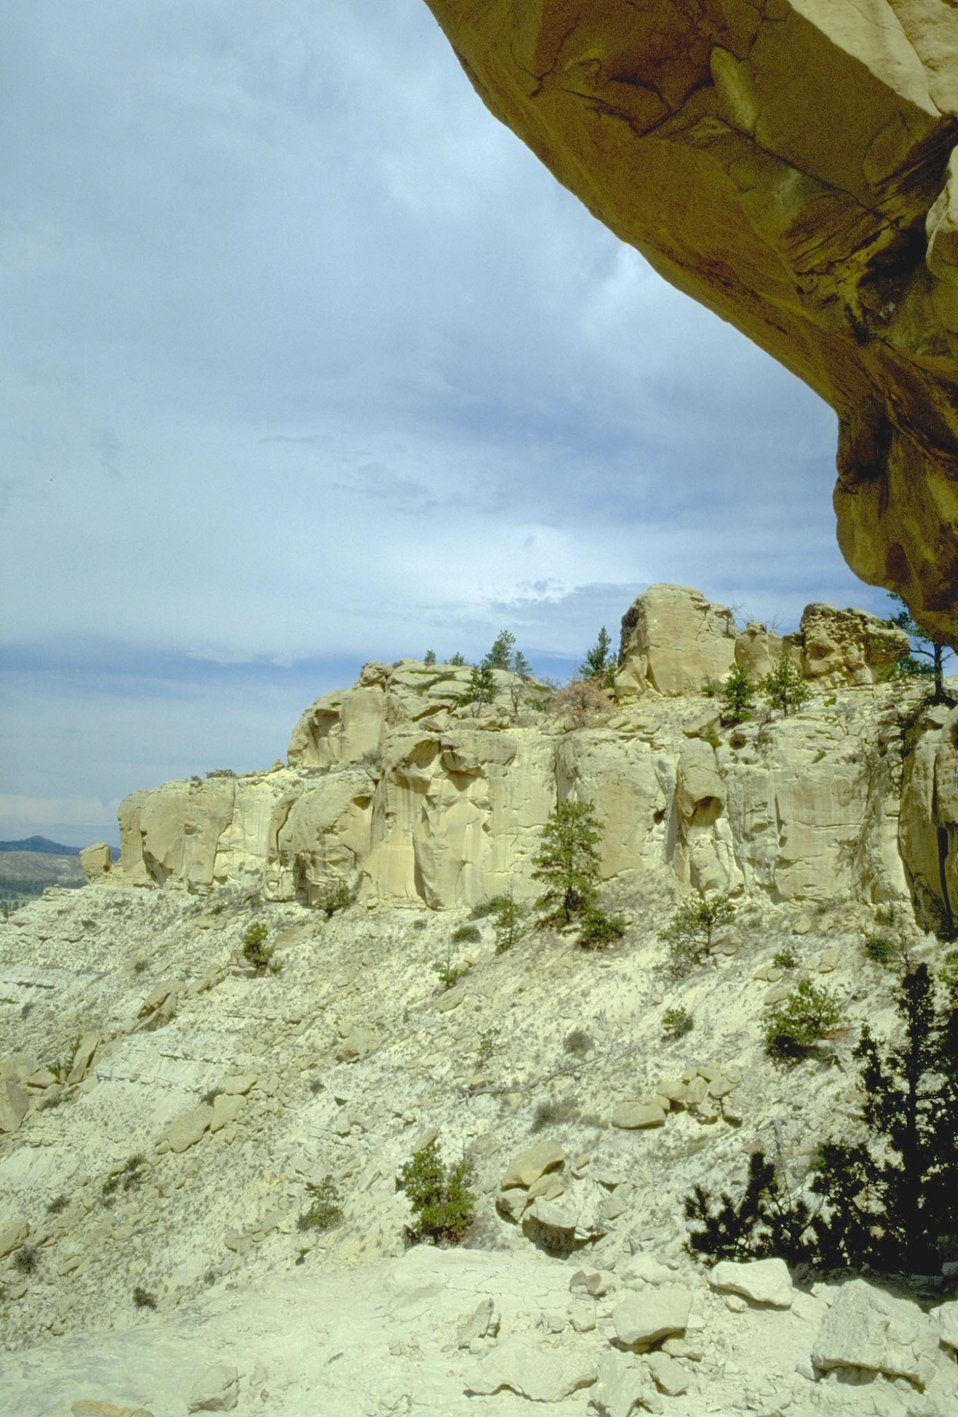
Steamboat Butte